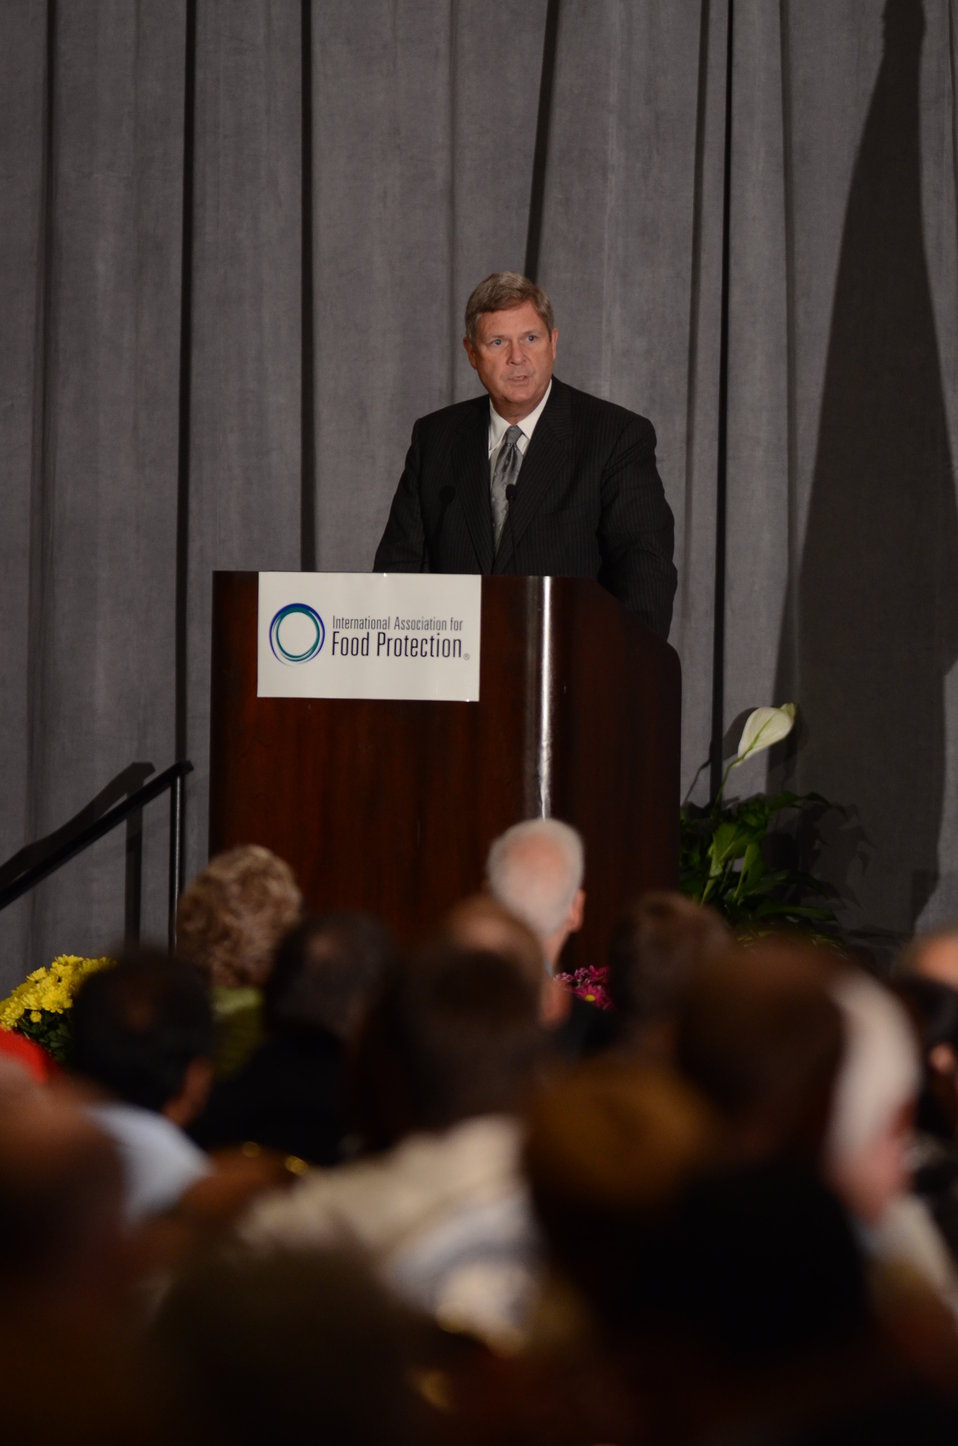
Agriculture Secretary Tom Vilsack speaks at the International Association for Food Protection (IAPP) 100th annual meeting in Milwaukee, WI, on Wednesday, August 3, 2011. IAPP is committed to providing members worldwide with a forum to exchange information on protecting the global food supply.